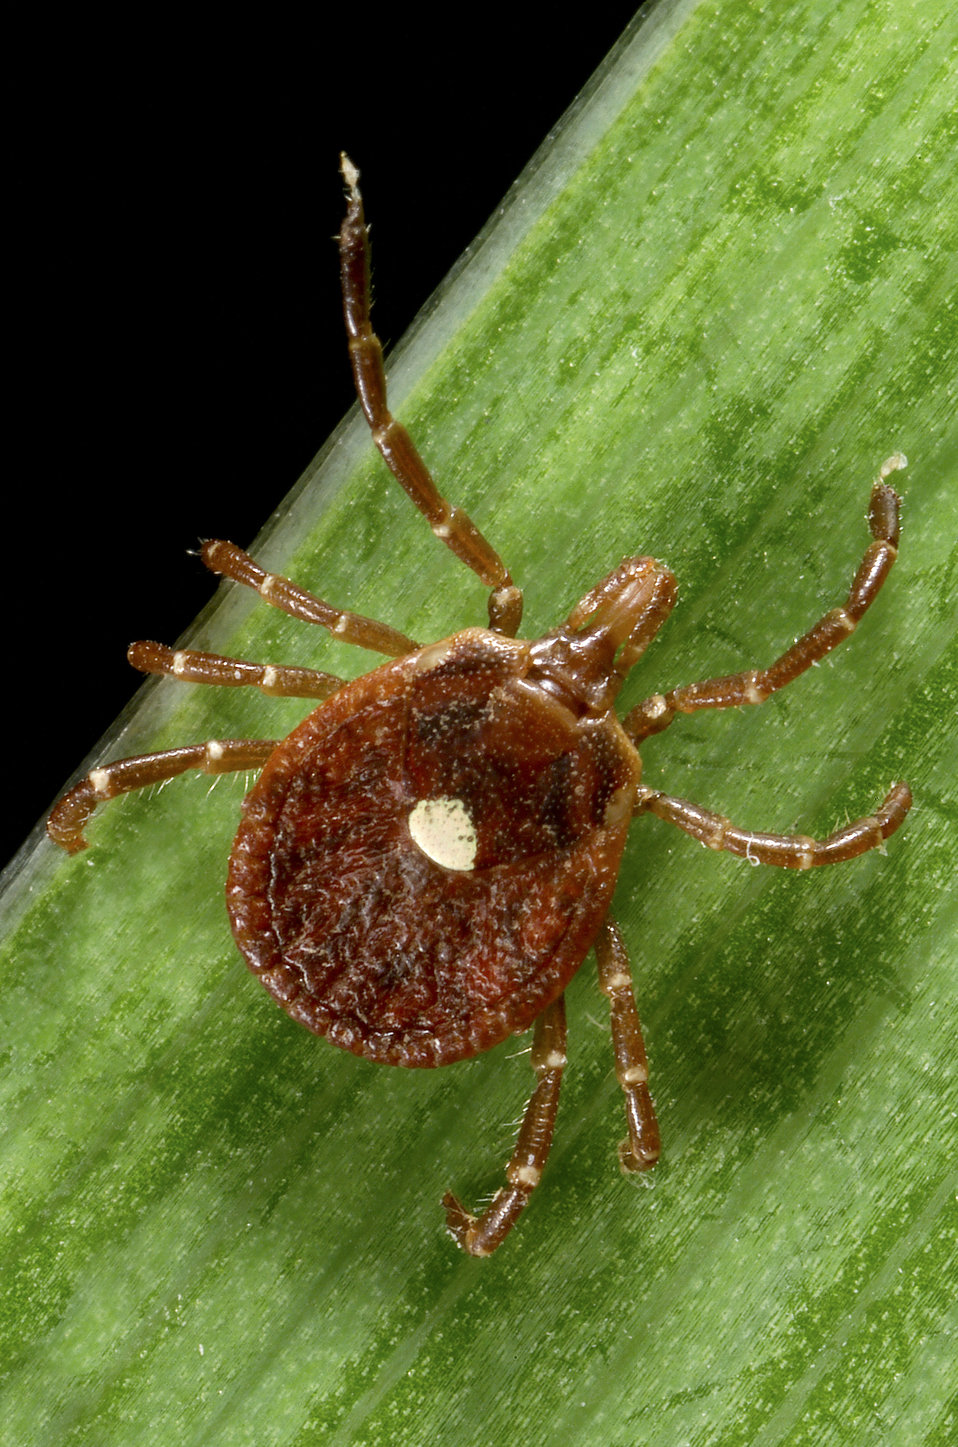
This photograph depicts a dorsal view of a female 'lone star tick', Amblyomma americanum. An ixodid or 'hard' tick, A. americanum is found through the eastern and south-central states and can transmit disease agents that affect humans, dogs, goats, and white-tailed deer. Representatives from all three of its life stages aggressively bite people in the southern U.S. Lone star ticks transmit Ehrlichia chaffeensis and Ehrlichia ewingii, both of which cause disease. Borrelia lonestari, a pathogen associated with 'Southern tick-associated associated rash illness' (STARI), also infects lone star ticks. Research suggests that up to 10% of the lone star ticks in an endemic area can be infected with any one of these pathogens. These ticks also are infected with a spotted-fever group Rickettsia, 'Rickettsia amblyommii' but it is unknown at this time if this bacterium causes disease.